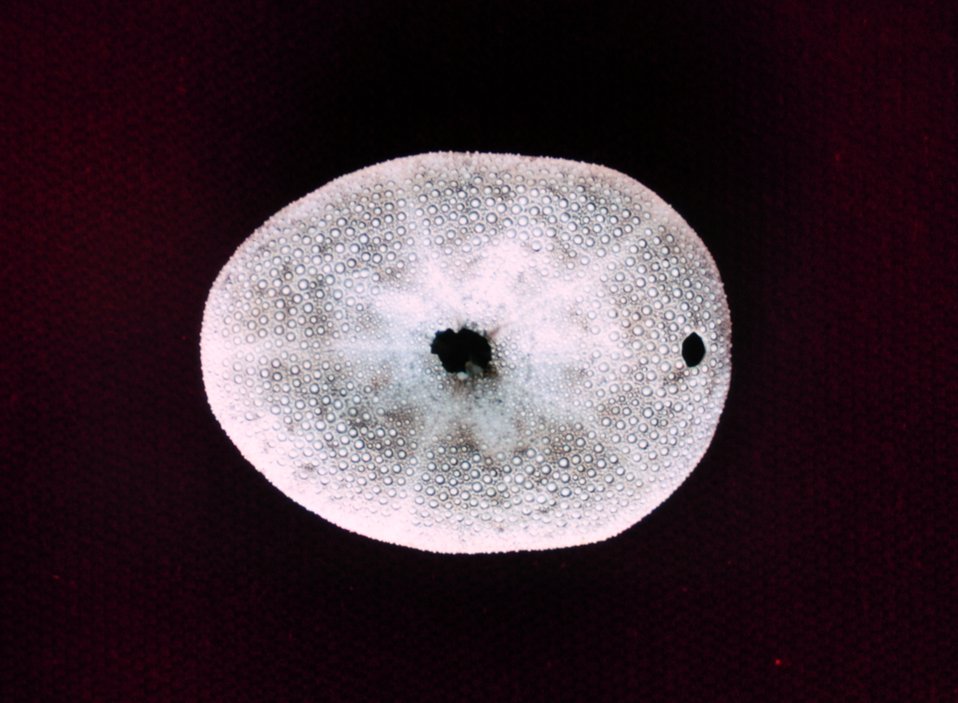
Clypeaster reticulatus, cake urchin test, ventral view.